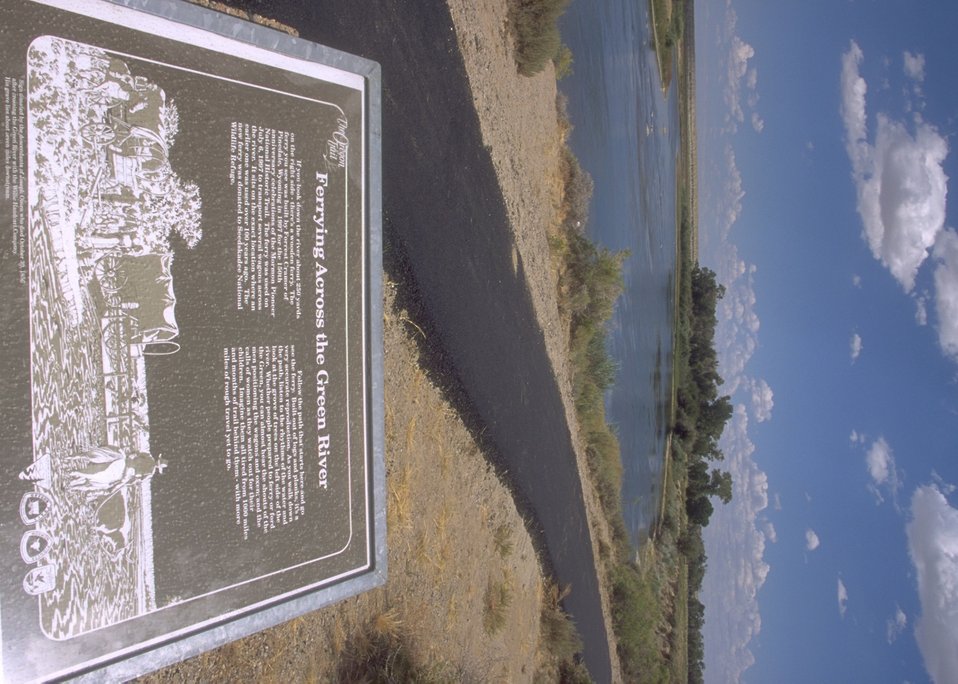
Lombard Ferry Crossing site along the Oregon & Mormon Trail on the Green River showing interpretive area, Rock Springs Field Office.